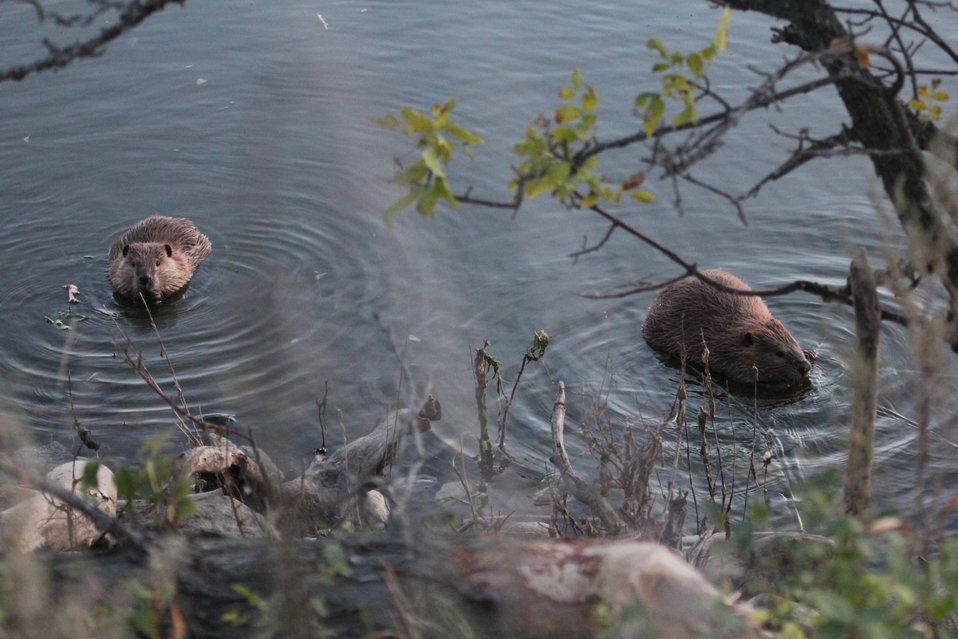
Beaver on Des Lacs Refuge

The beaver (genus Castor) is a primarily nocturnal, large, semi-aquatic rodent.

Here, two beavers enjoy the beautiful Fall weather on Des Lacs Lake.